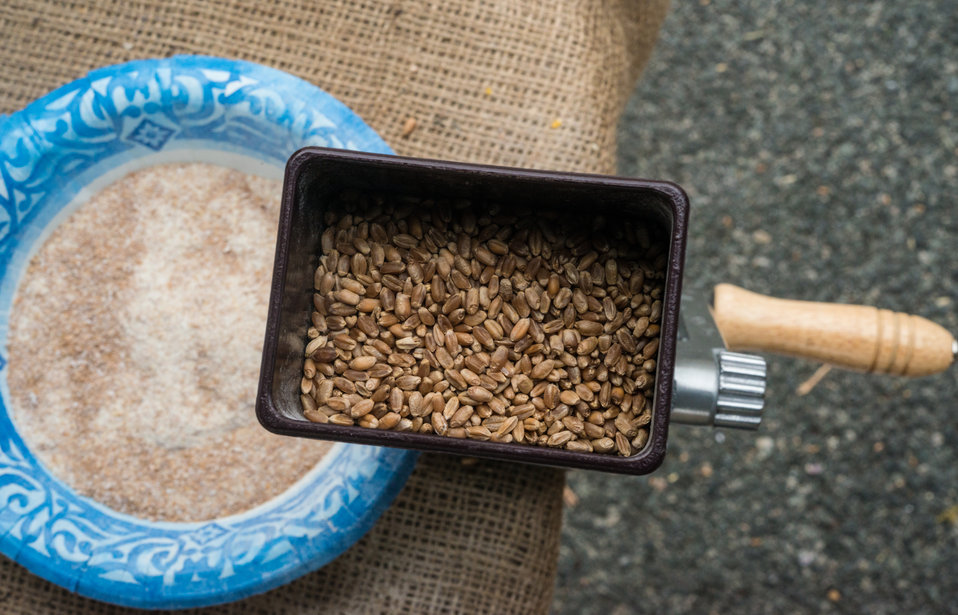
Wheat grains before and after being ground at the 18th U.S. Department of Agriculture (USDA) summer farmers market final outdoor market of the season at the USDA Whitten Building east parking lot in Washington, DC, on Friday, November 22, 2013.